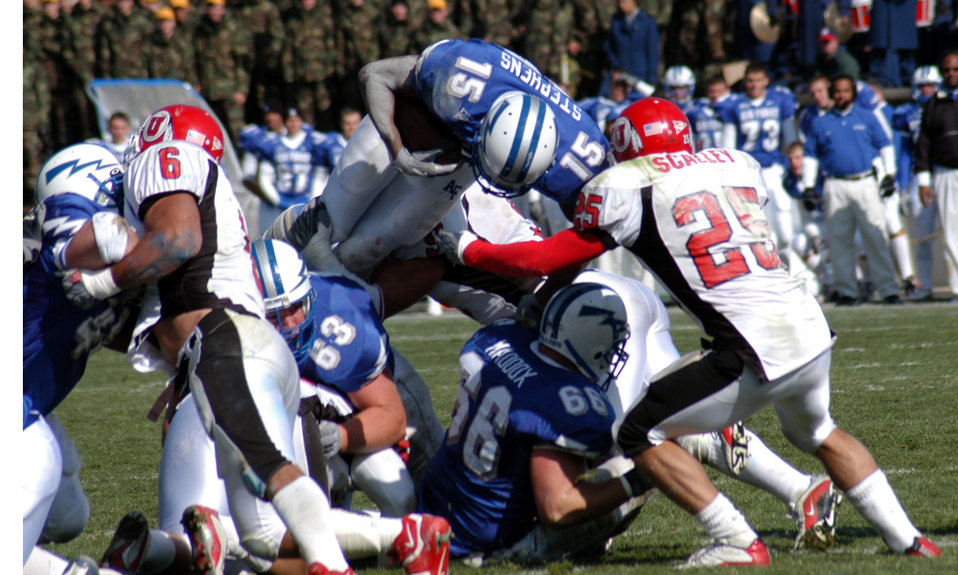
Over the top

U.S. AIR FORCE ACADEMY, Colo. -- Five seconds into the fourth quarter, Darnell Stephens dives over the top for a 3-yard touchdown to start the come-from-behind march by the U.S. Air Force Academy against the University of Utah on Nov. 1. The game went into triple overtime where the Utah Utes came out on top 45-43.